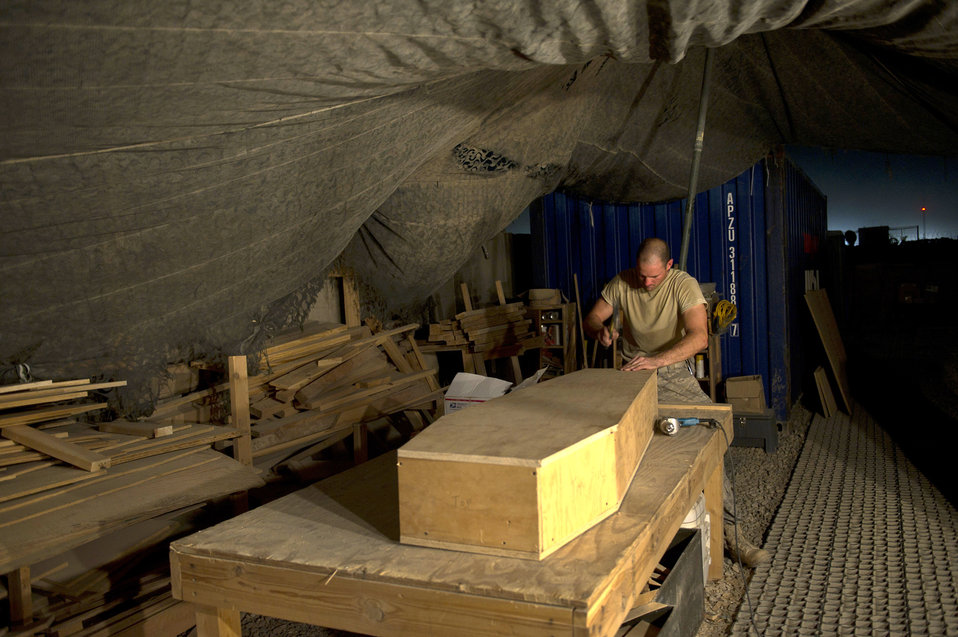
Sergeant Reininger

Master Sgt. Jason Reininger builds a child-size coffin to be turned over to the hospital at Camp Bastion, Afghanistan. Sergeant Reininger is an aerospace medical technician assigned to the 451st Expeditionary Aeromedical Evacuation Squadron.